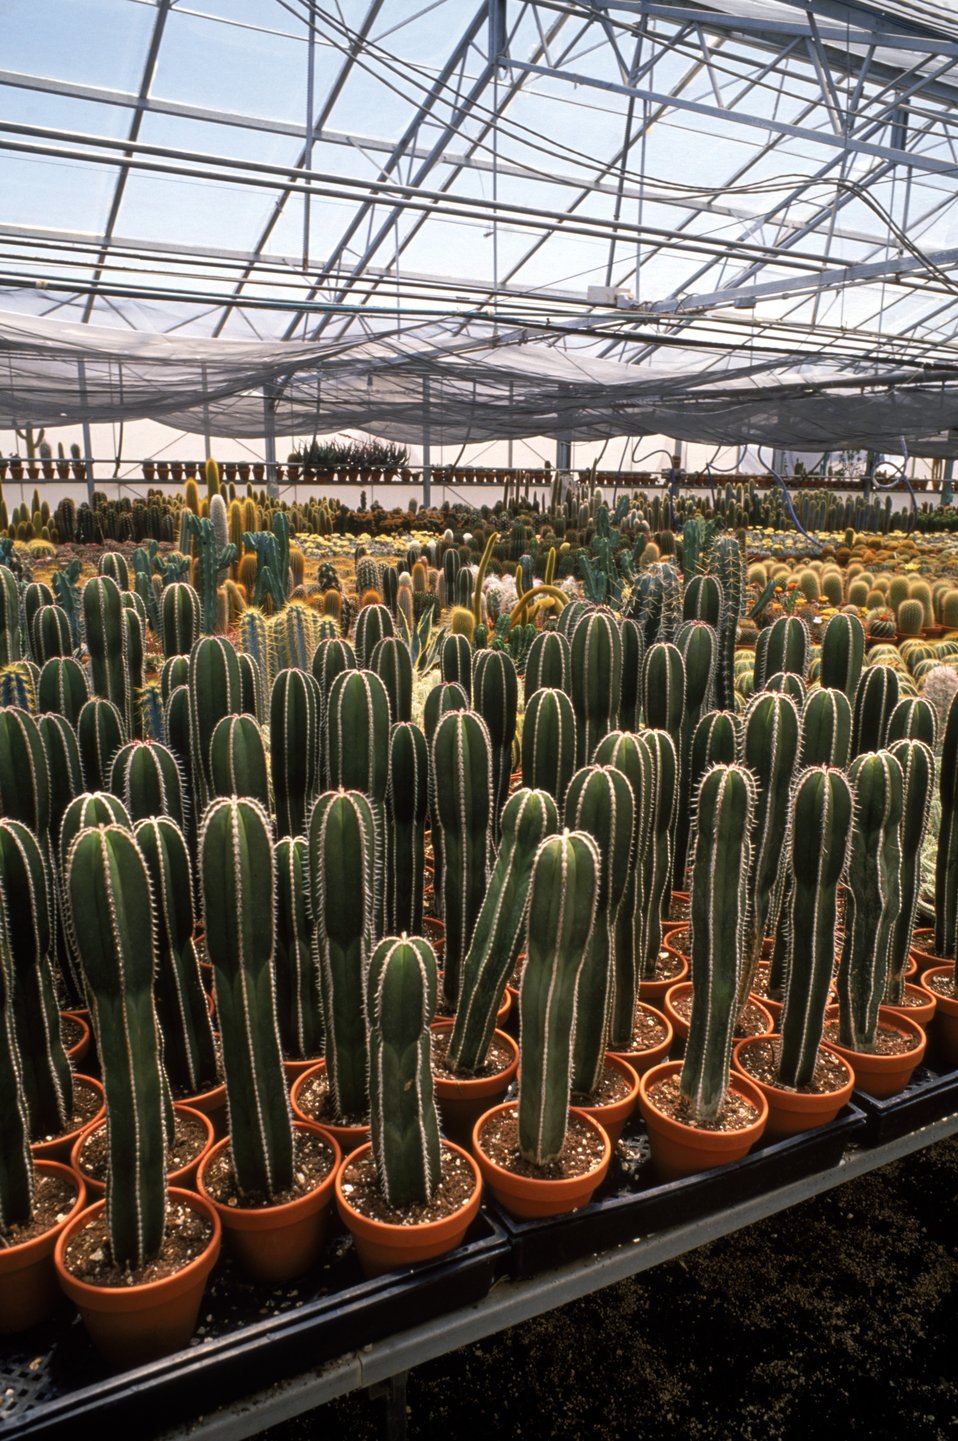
INTERIOR OF SOUTHWEST TECHNOLOGY DEVELOPMENT INSTITUTE BUSINESS INCUBATOR GREENHOUSE IN NEW MEXICO.